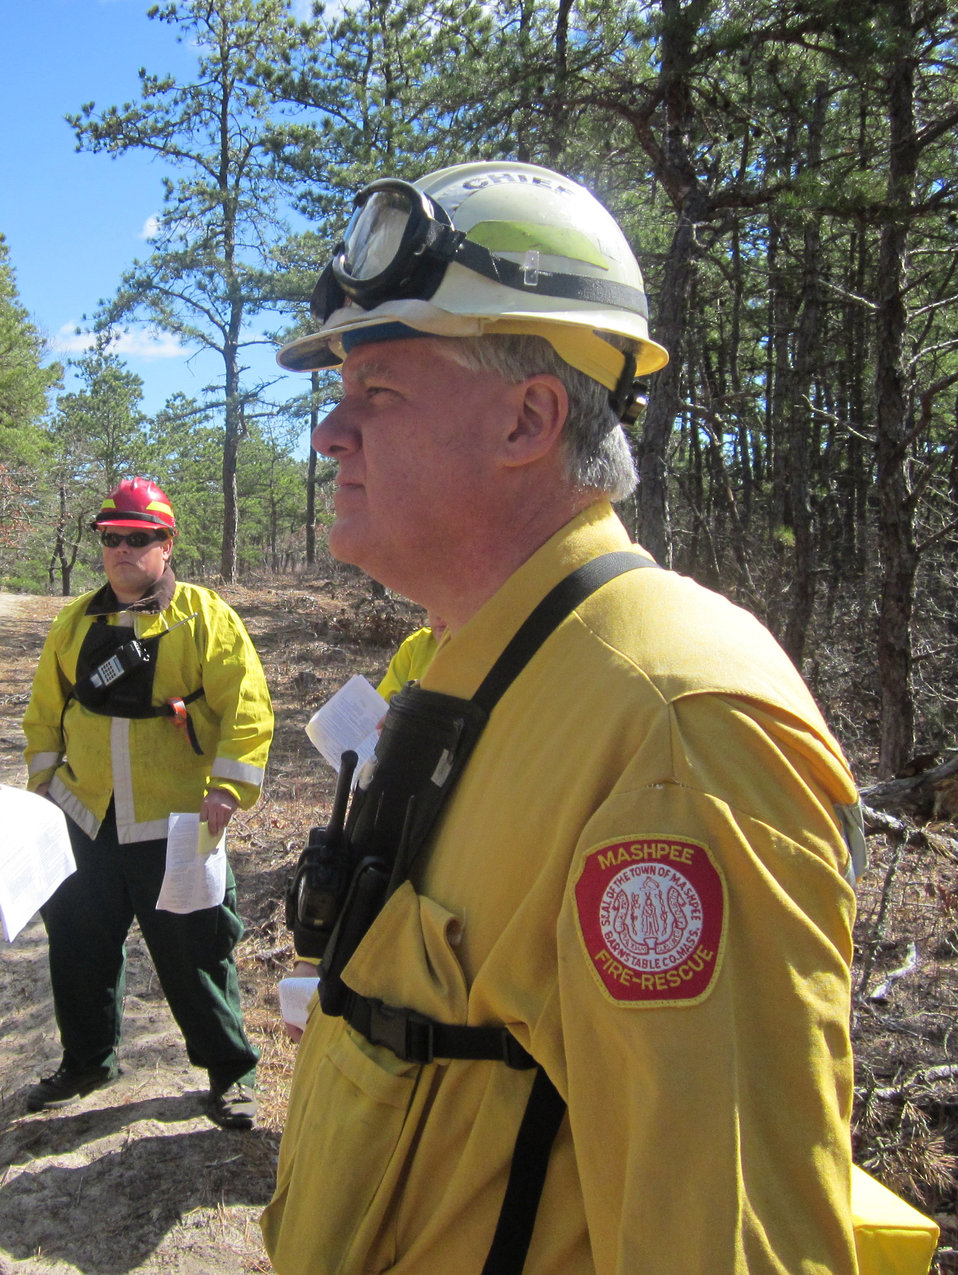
Chief Baker, Mashpee Fire Department

Mashpee, Massachusetts, April 5, 2012. George Baker, Chief of the Town of Mashpee, Massachusetts Fire Department, listens during a pre-burn safety briefing for a controlled burn at the Town of Mashpee Holland Hill Barrens area of Mashpee National Wildlife Refuge. The burn reduced fire risk to neighboring homes and improved habitat for the New England cottontail. It was conducted by the Town of Mashpee, U.S. Fish and Wildlife Service, State of Massachusetts Department of Conservation and Recreation, and Northeast Forest and Fire Management.